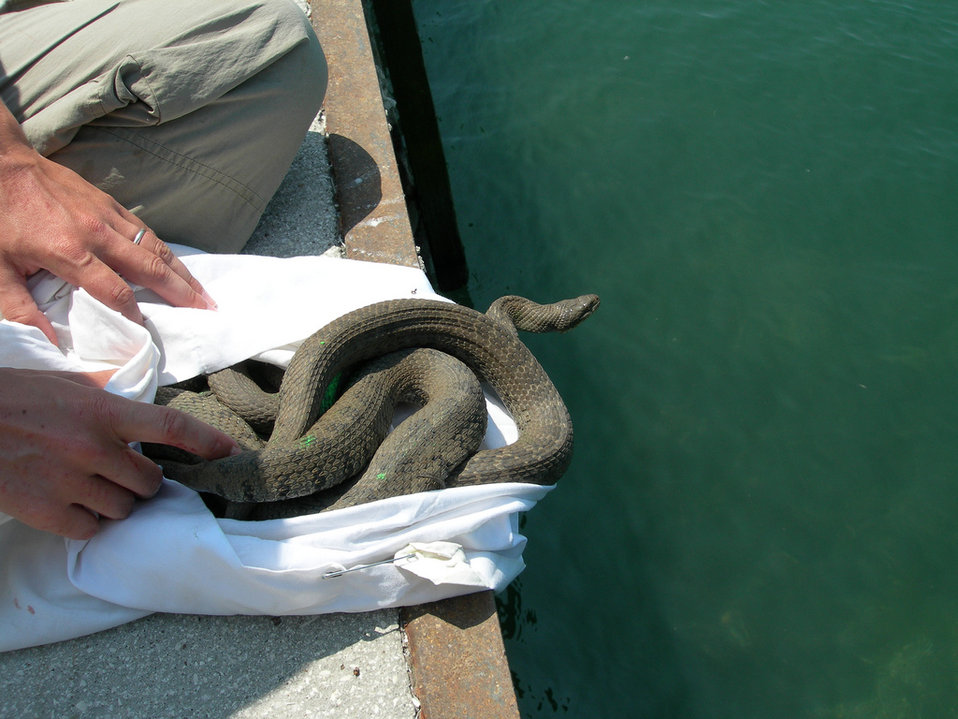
Recovered Lake Erie watersnake (Nerodia sipedon insularum)